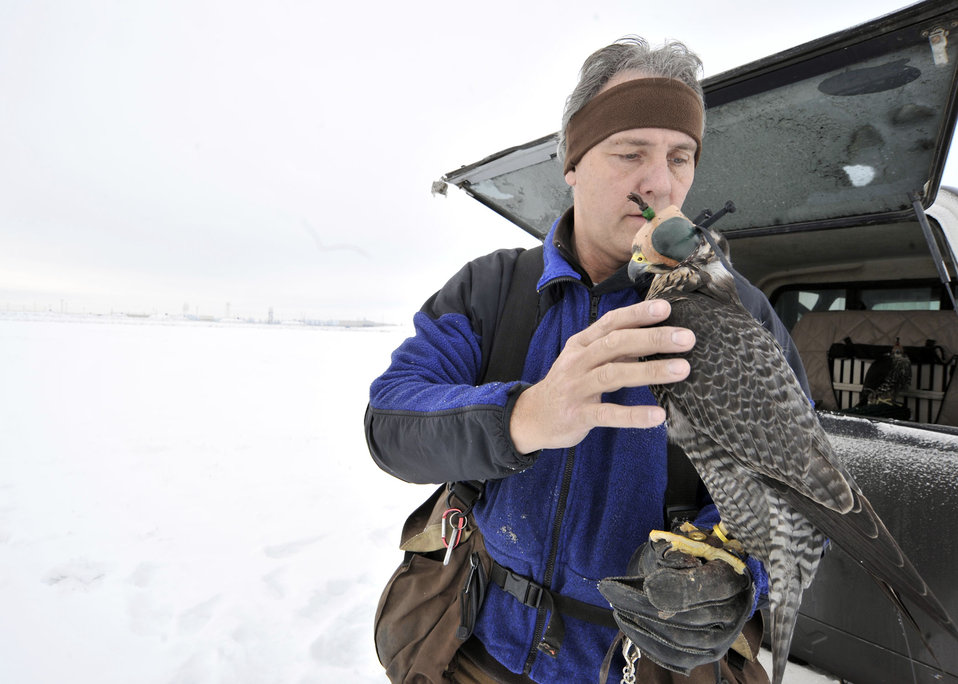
Safety team

Dave Knutson performs ready checks on his falcon before flight Jan. 4, 2011, at Fairchild Air Force Base, Wash. Mr. Knutson is a wildlife specialist with the 92nd Air Refueling Wing safety office.